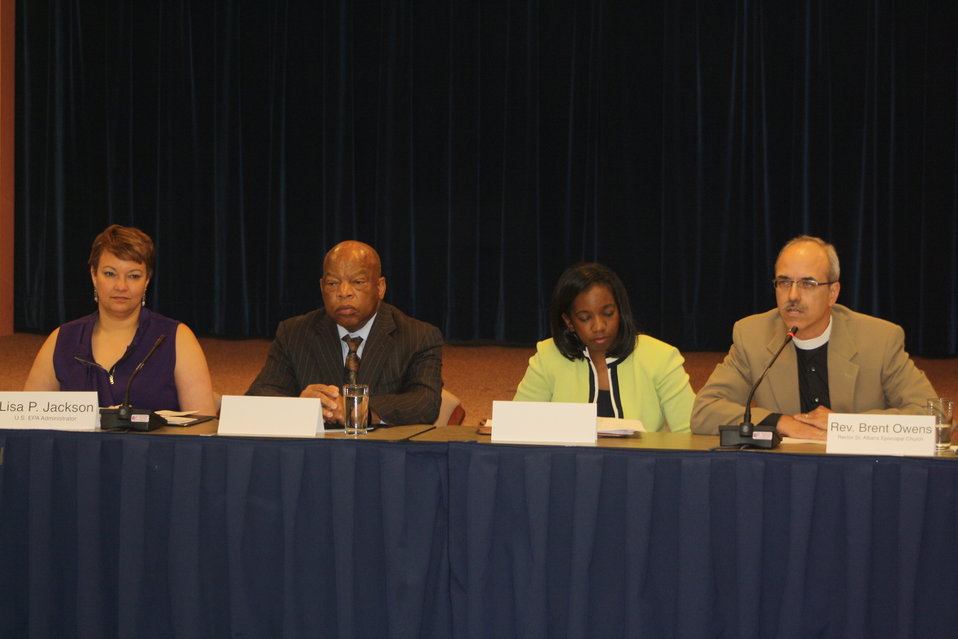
Faith-Based and Neighborhood Partnership launch at Atlanta's Carter Center